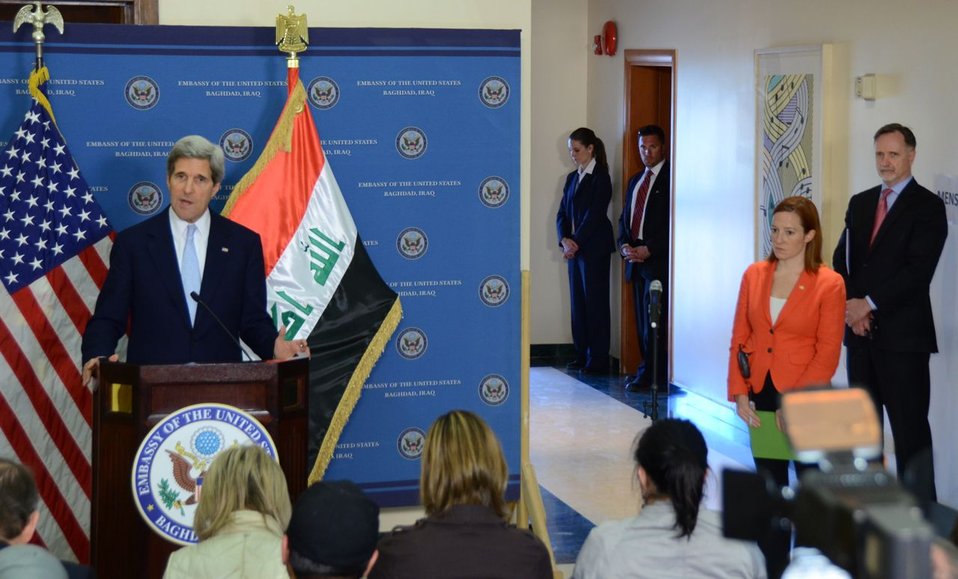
Secretary Kerry Delivers Remarks in Baghdad

U.S. Secretary John Kerry delivers remarks at a press availability, U.S. Ambassador to Iraq R. Steve Beecroft and incoming State Department Spokesperson Jennifer Psaki look on, at the U.S. Embassy in Baghdad, Iraq on March 24, 2013.